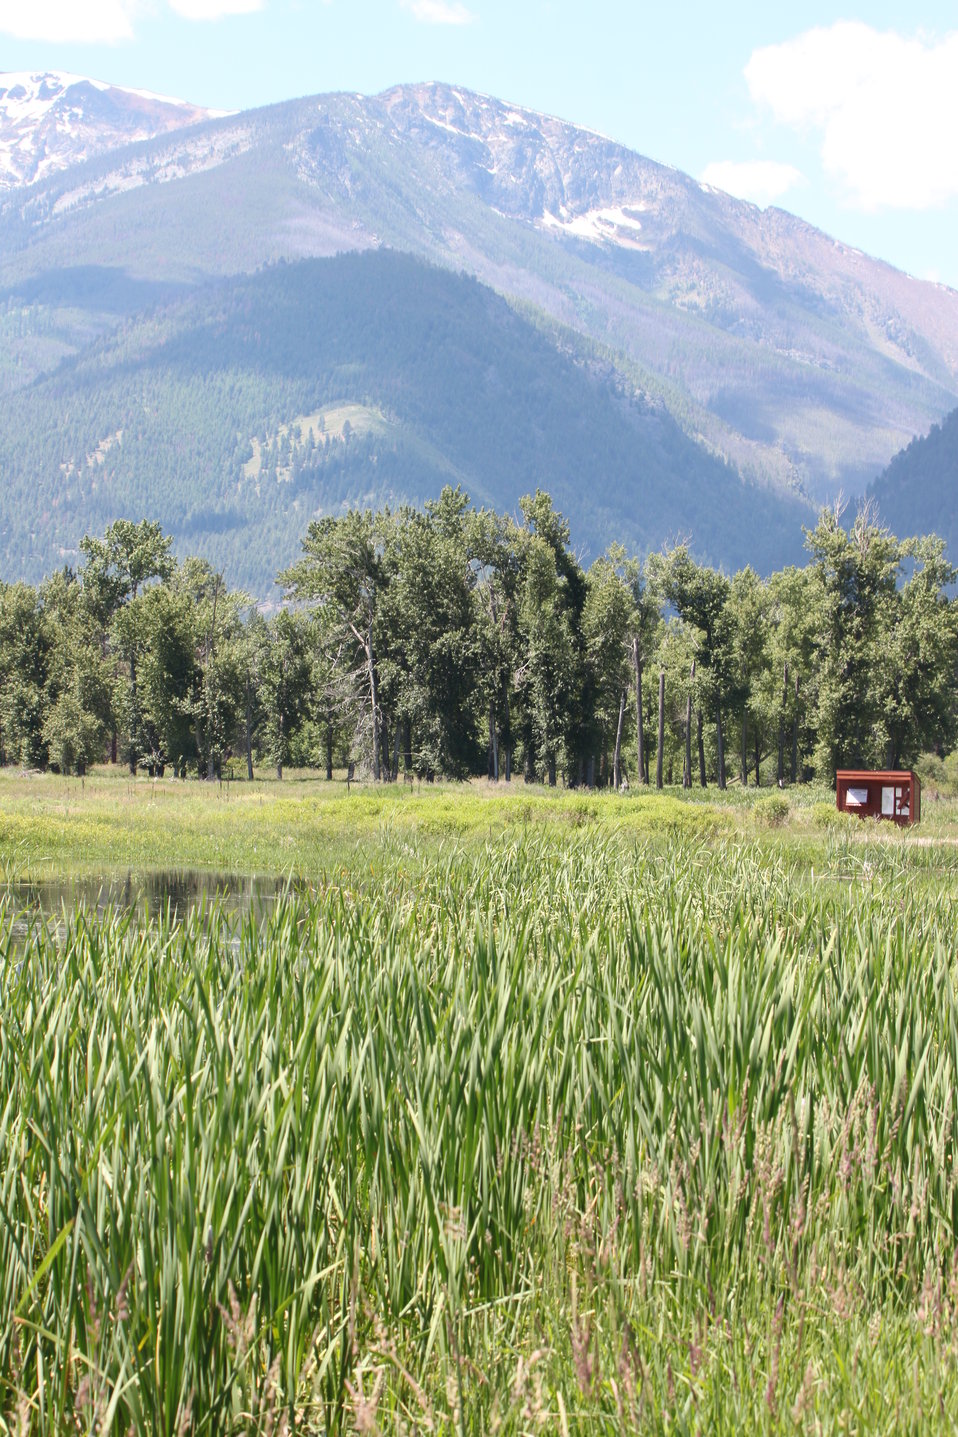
Waterfowl Hunt Area

Looking west from interior of Waterfowl Hunt Area.